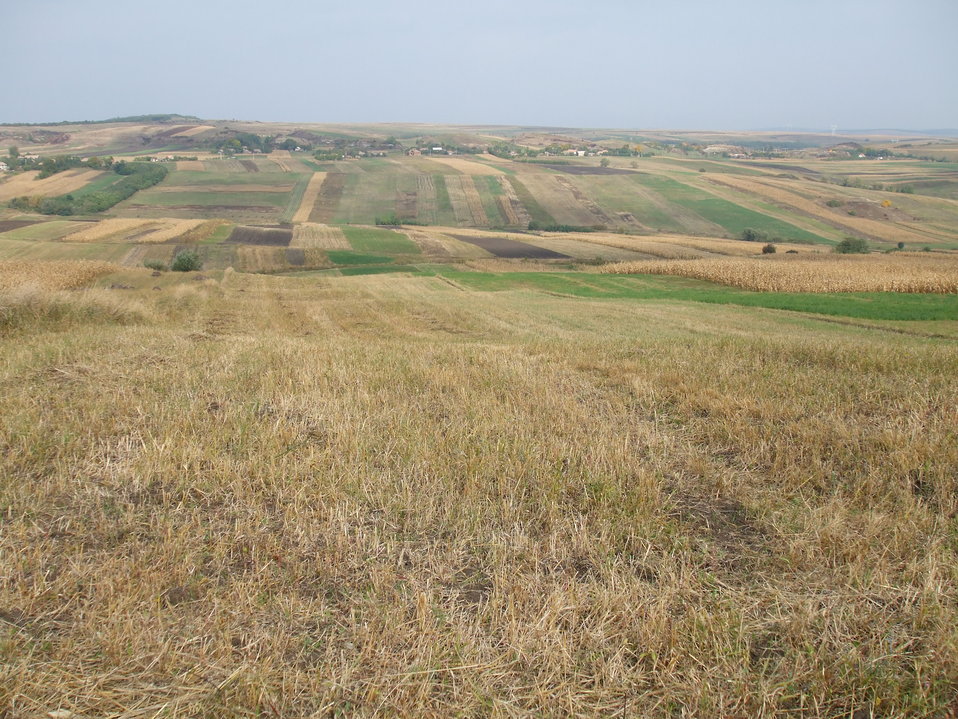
Română: Imagini-Damburile,Cluj